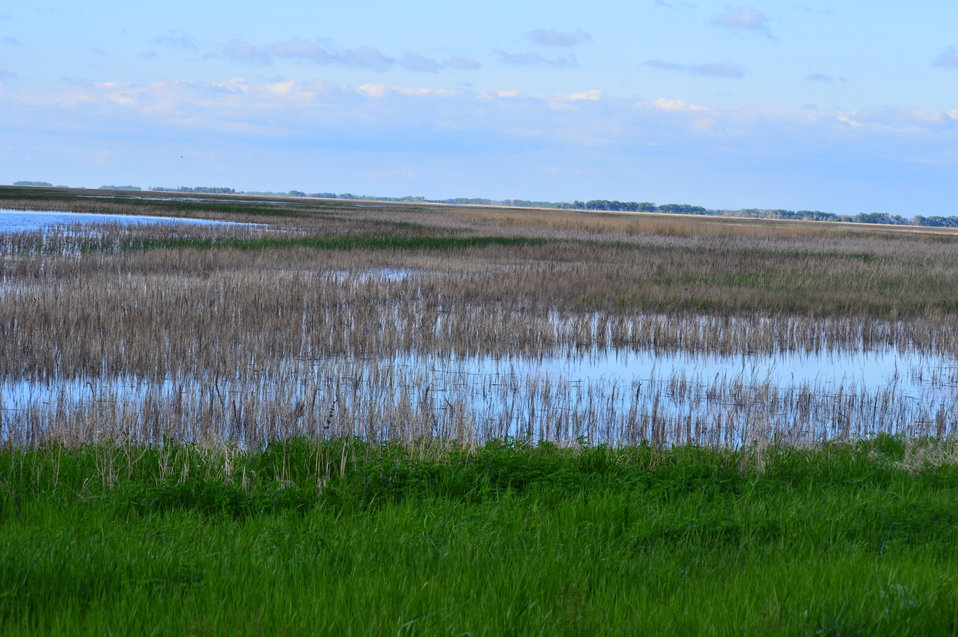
Sun setting on Sand Lake

Scenery and wildlife at Sand Lake National Wildlife Refuge in South Dakota